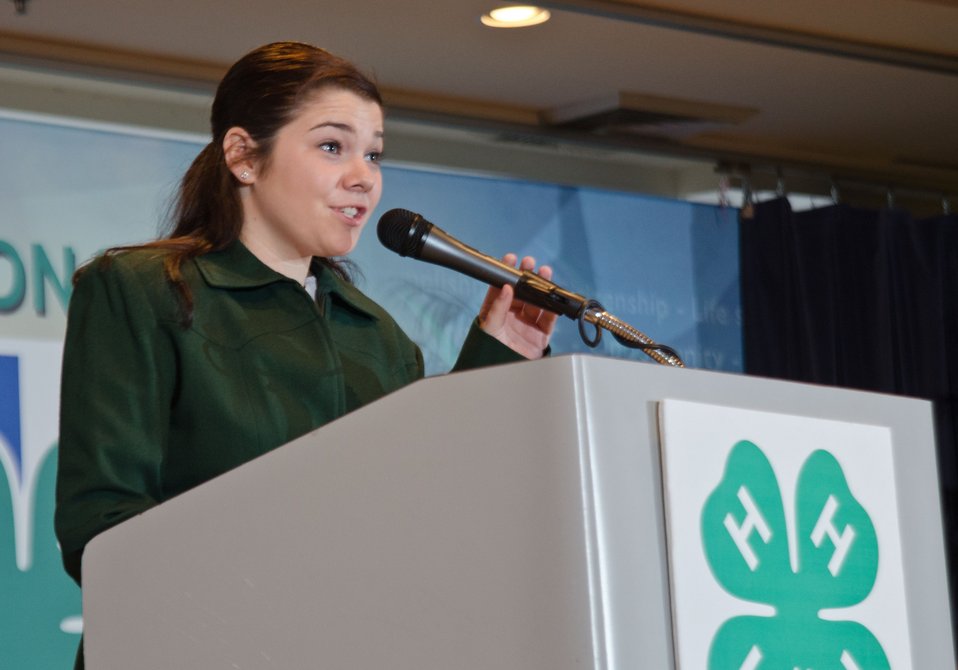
4-H Youth Leadership Team's Brittany Avant is the moderator of the 2012 National 4-H Conference, sponsored by the U.S. Department of Agriculture's (USDA) National Institute of Food and Agriculture (NIFA), in Washington, D.C. on Monday, March 26, 2012.